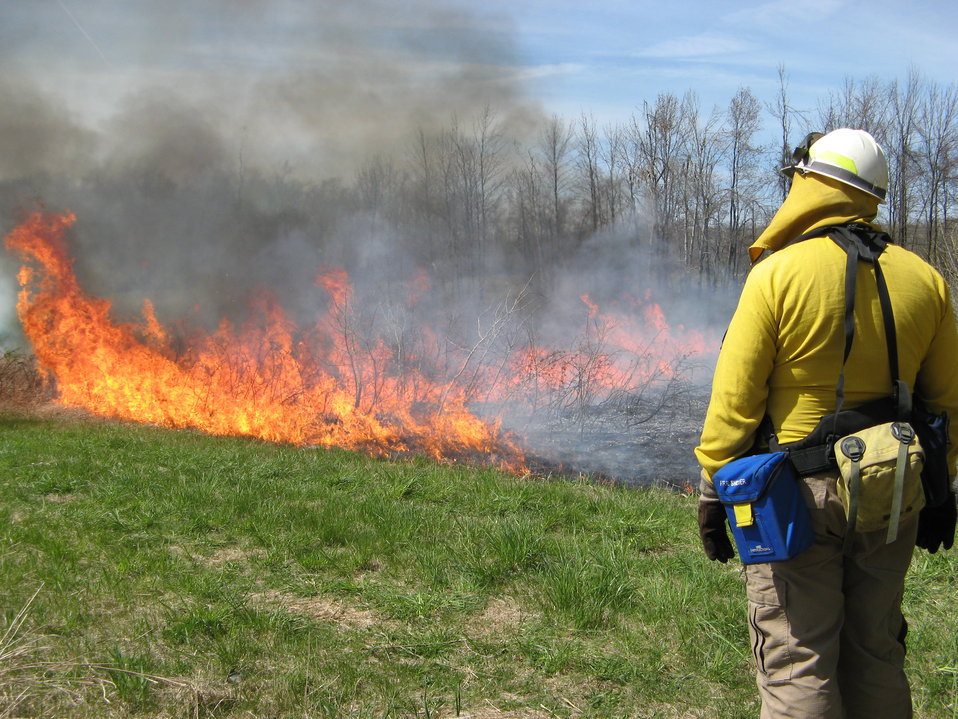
Photo of the Week - Fire management officer during a controlled fire at Iroquois National Wildlife Refuge, NY

Photo of the Week - 02/28/11

Alabama, New York: U.S. Fish and Wildlife Service fire management officer Mike Durfee watches the progress of a controlled burn to benefit grassland breeding birds at Iroquois National Wildlife Refuge in upstate New York.